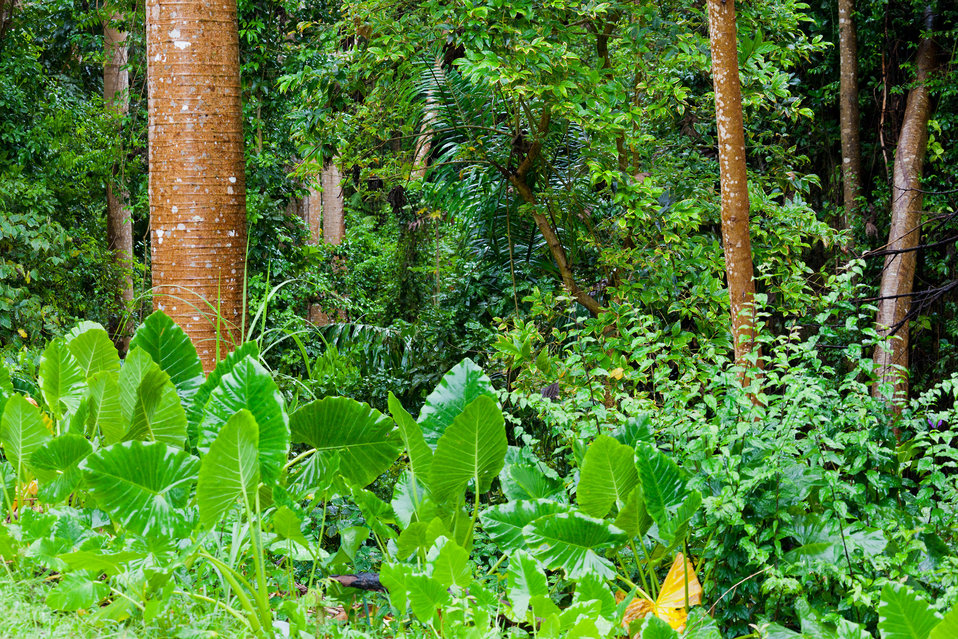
Jungle vegetation on a rainy day.